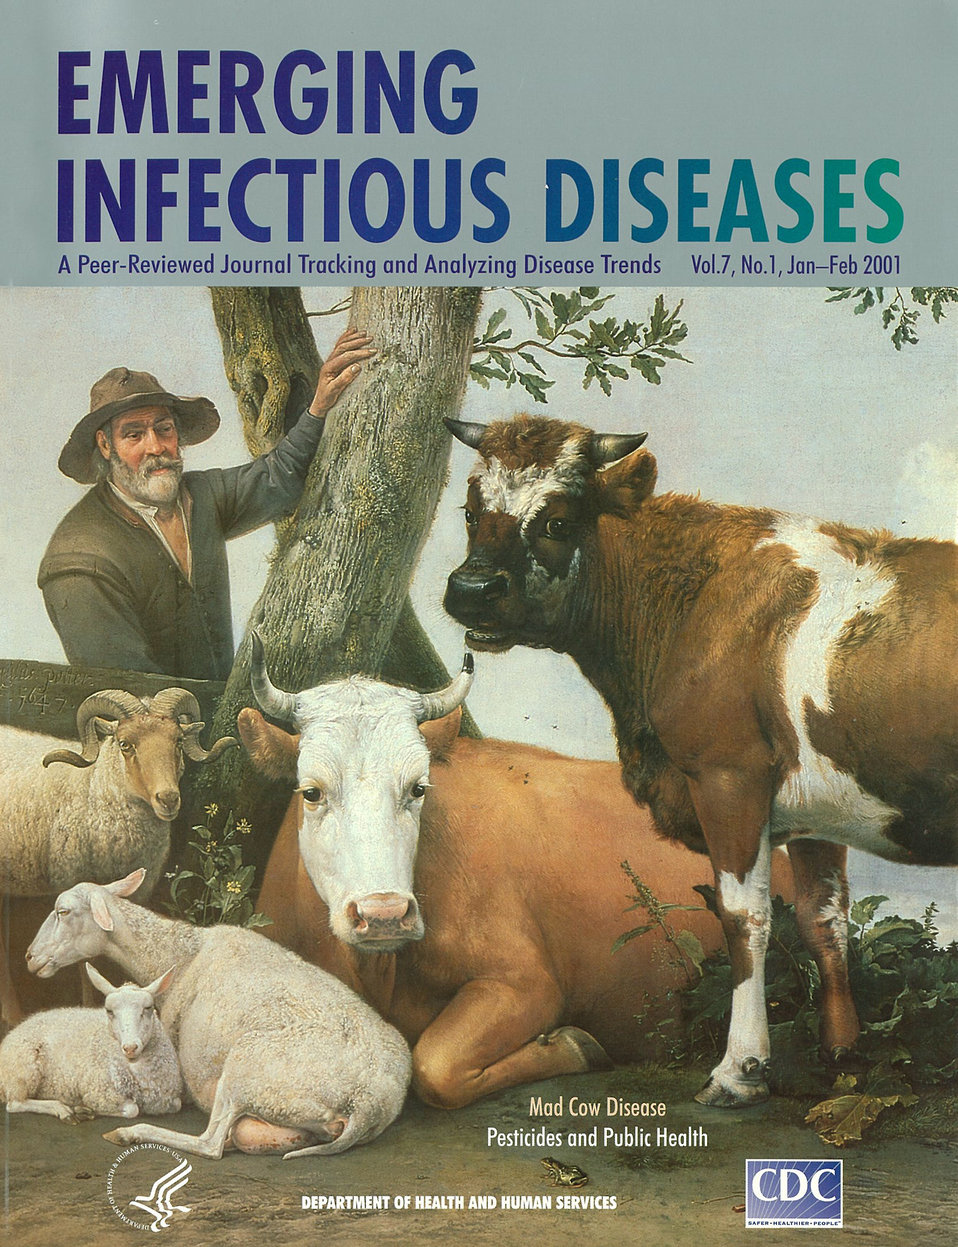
Emerging Infectious Diseases (EID) cover artwork for Volume 7, Number 1, January-February 2001 issue.